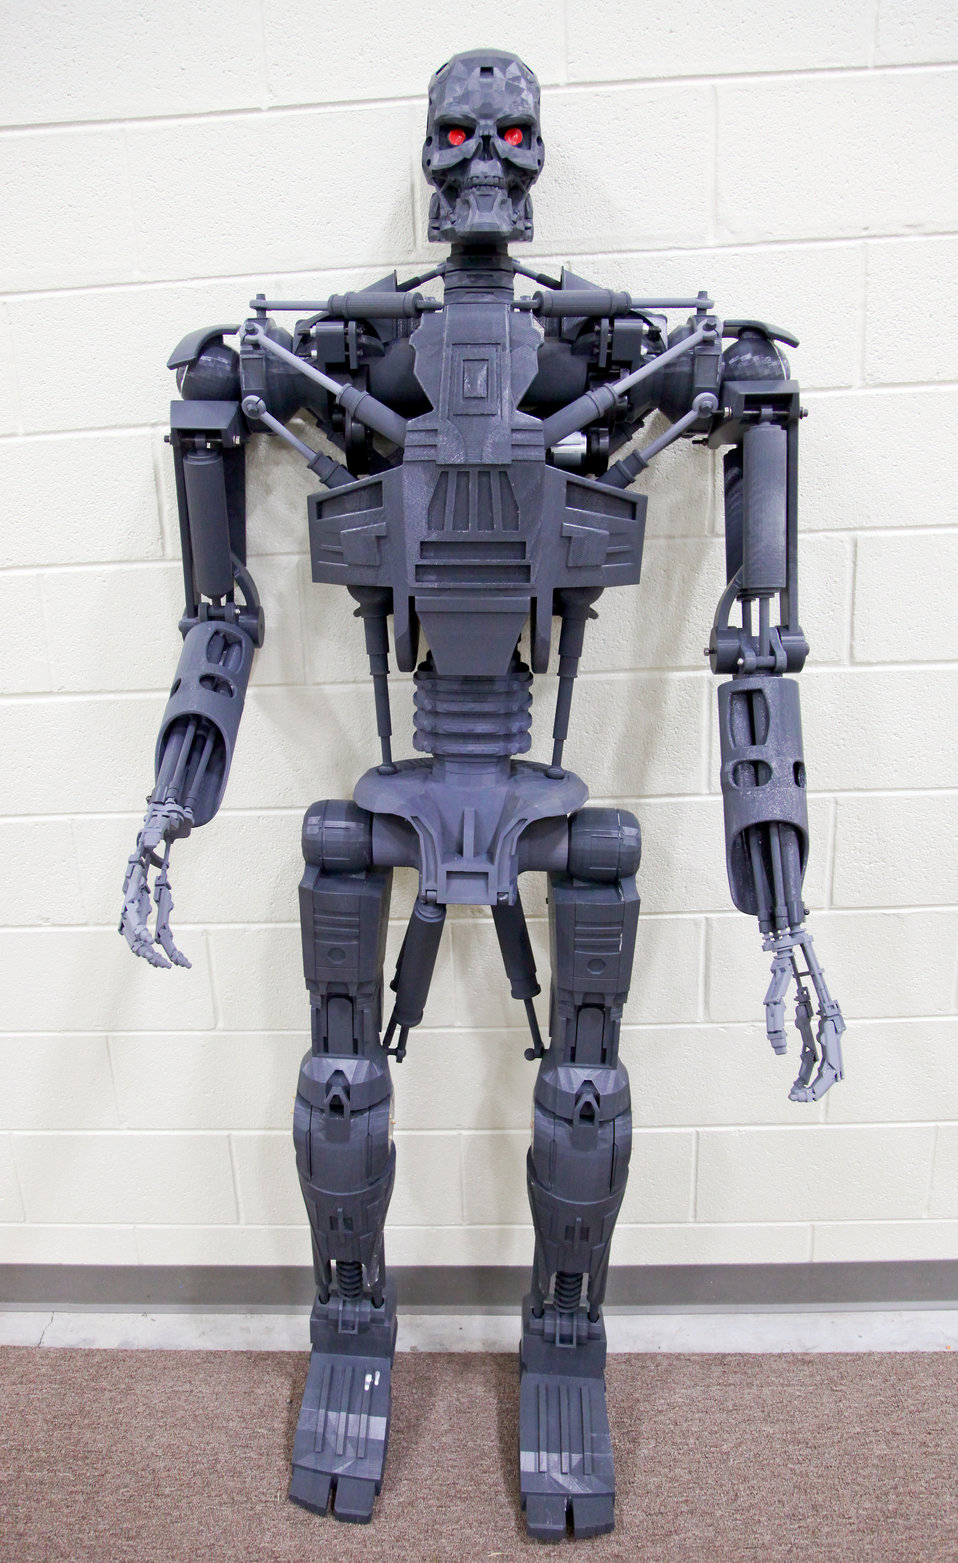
Full scale robot printed by Science, Technology, Engineering and Mathematics (STEM) students using polymer additive manufacturing technology at the Manufacturing Demonstration Facility at Oak Ridge National Laboratory.